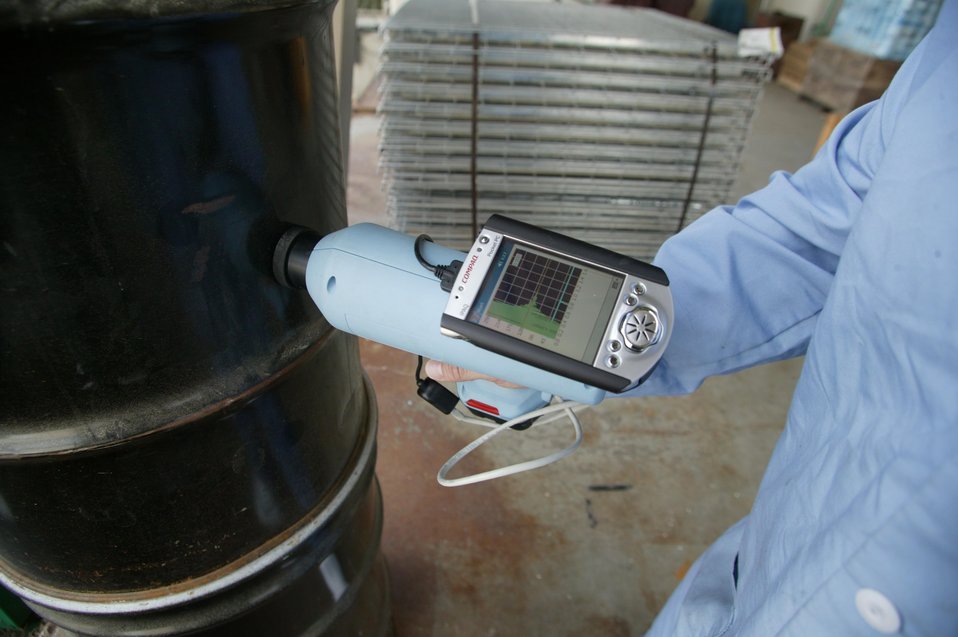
DEMONSTRATING THE USE OF THE ACOUSTIC INSPECTION DEVICE AT THE HAZARDOUS MATERIALS MANAGEMENT AND EMERGENCY TRAINING CENTER (HAMMER).

THE ACOUSTIC INSPECTION DEVICE (AID) IS A PORTABLE, HANDHELD DEVICE THAT EXAMINES AND INSPECTS CONTAINERS NON-INVASIVELY. RESEACHERS AT PACIFIC NORTHWEST NATIONAL LABORATORY ARE DEVELOPING AID TO ASSIST THE LAW ENFORCEMENT COMMUNITY, THE MILITARY, AND INTERNATIONAL TREATY CONVENTIONS IN THEIR EFFORTS TO SUPPORT HOMELAND DEFENSE, DETER ILLICIT DRUG MANUFACTURING, STOP SMUGGLING, COLLECT TAXES AND TARIFFS, EFFECTIVELY MAINTAIN INVENTORIES AND VERIFY TREATY COMPLIANCE.